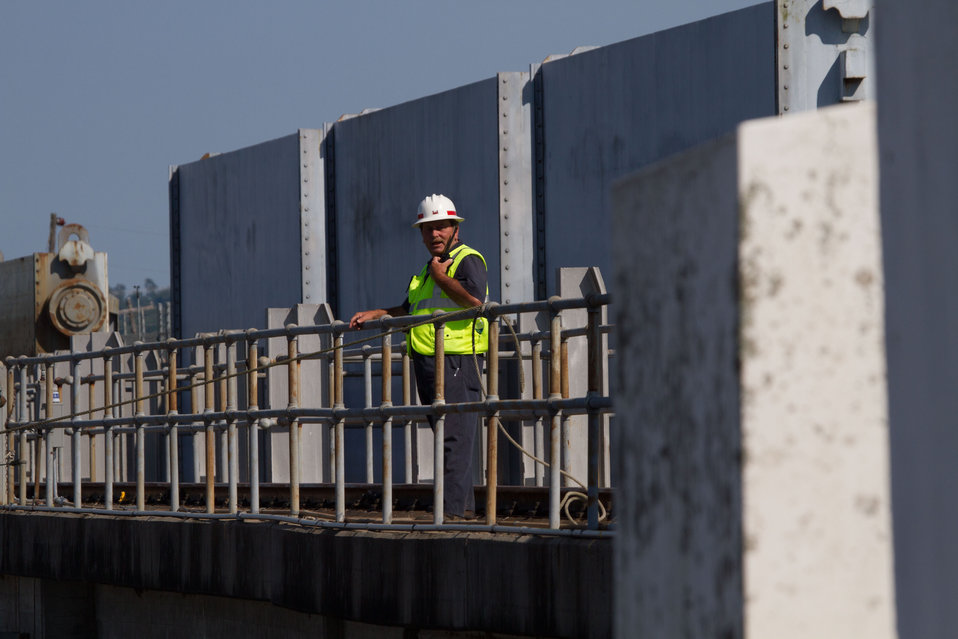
The Army Corps of Engineers conduct daily depth measurements along the intake side of The Old River Control Complex, Low Sill Structure in Concordia Parish, LA, on Tuesday, May 17, 2011. The measurements tell both the condition along the intake “ramp” and allow them to calculate the flow through the gates. The Old River Control Complex is designed to channel as much as 30 percent of the Mississippi River’s flow into the Gulf of Mexico through it’s eleven 44-foot wide gates across 566 foot span that separates the Mississippi and (the outflow channel to the) Red and Atchafalaya Rivers. Rated at 300,000 million gallons per minute (note: That’s more than seven Olympic sized swimming pools every second). Although this helps the Mississippi River, it (along with other concerns, puts back pressure on the Red River and other waterways, possibly causing some flooding of farms to avoid a catastrophic breech of the levee system. Most of the gates have been opened by a rolling crane and stored in racks. Debris, some as larger than telephone polls make their way through the gates and pool in eddies. The constant motion and contact with other objects, strip trees of their branches and bark. 20-30 pound Carp can frequently be seen jumping out of the white water.